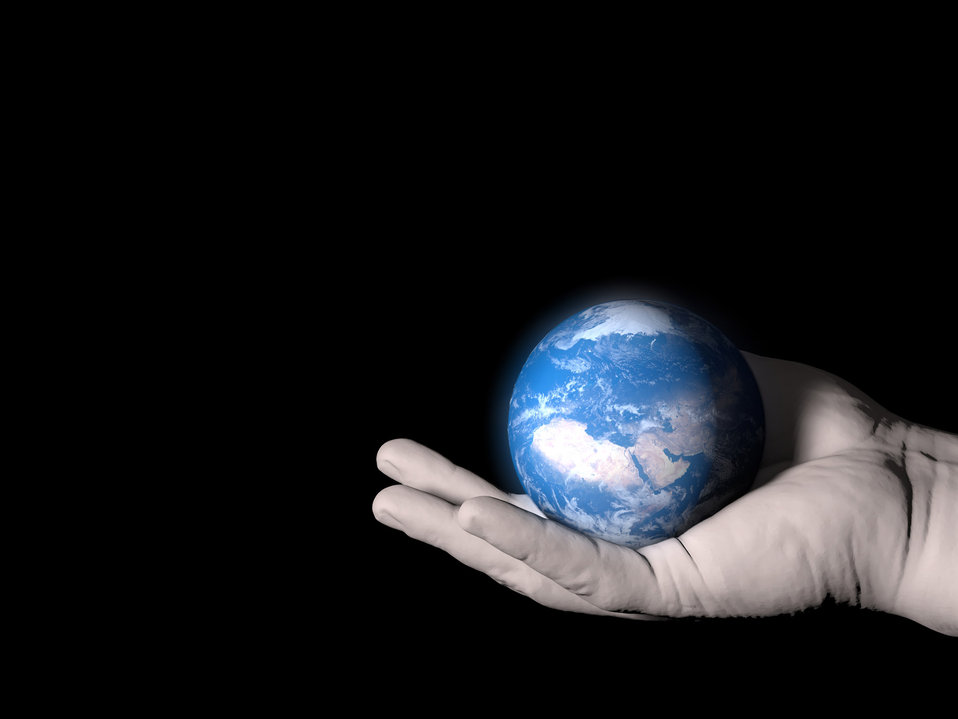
Our planet on a palm

Planet earth in the palm of human.